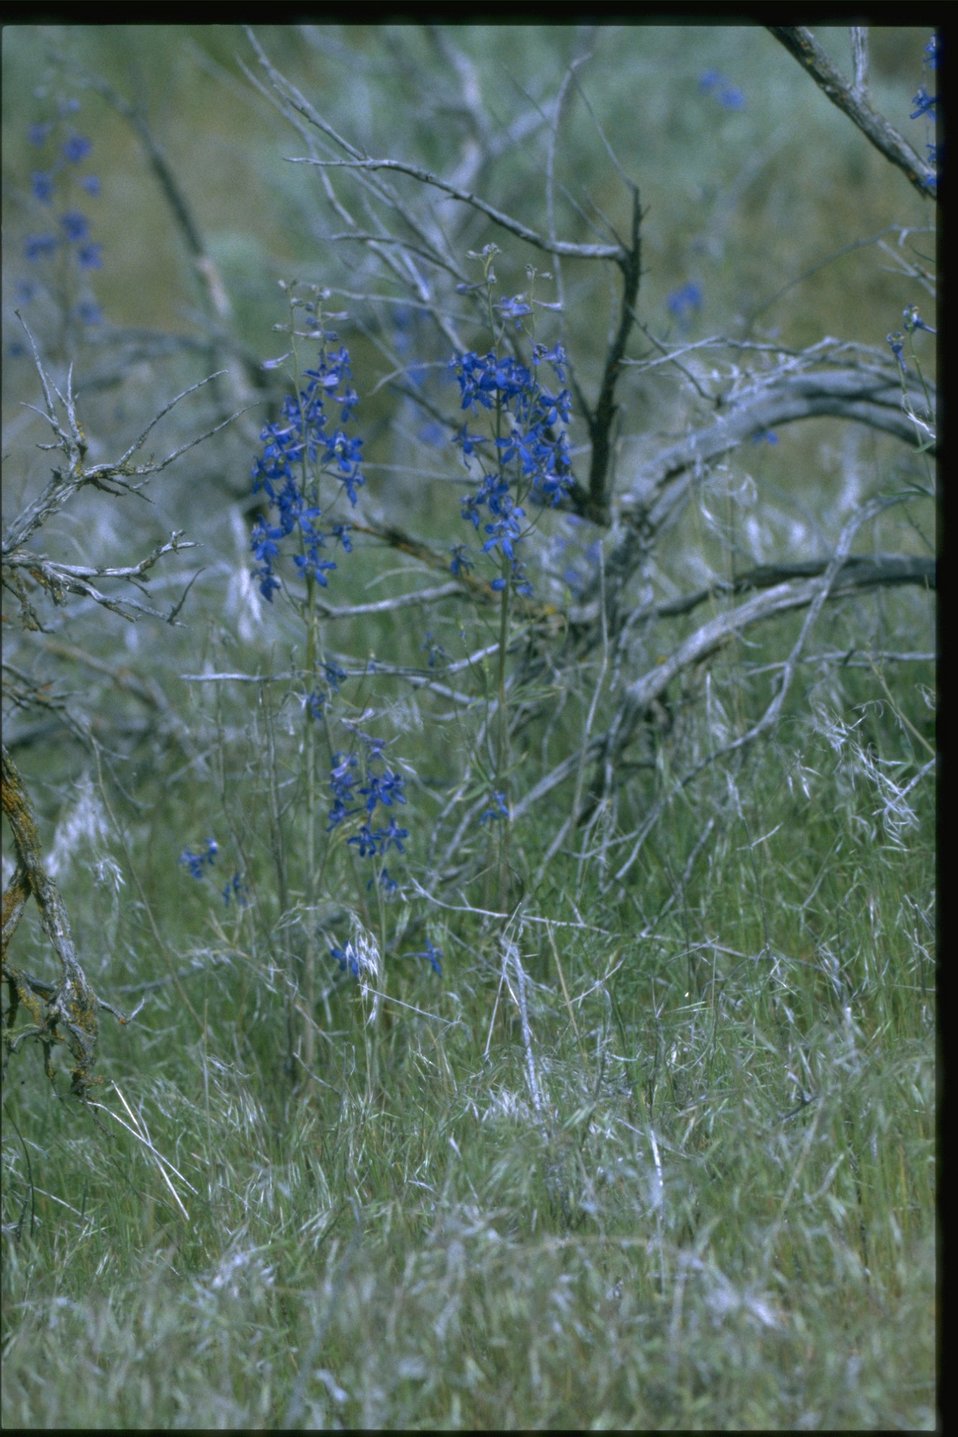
Medium shot of Larkspur Habitat.